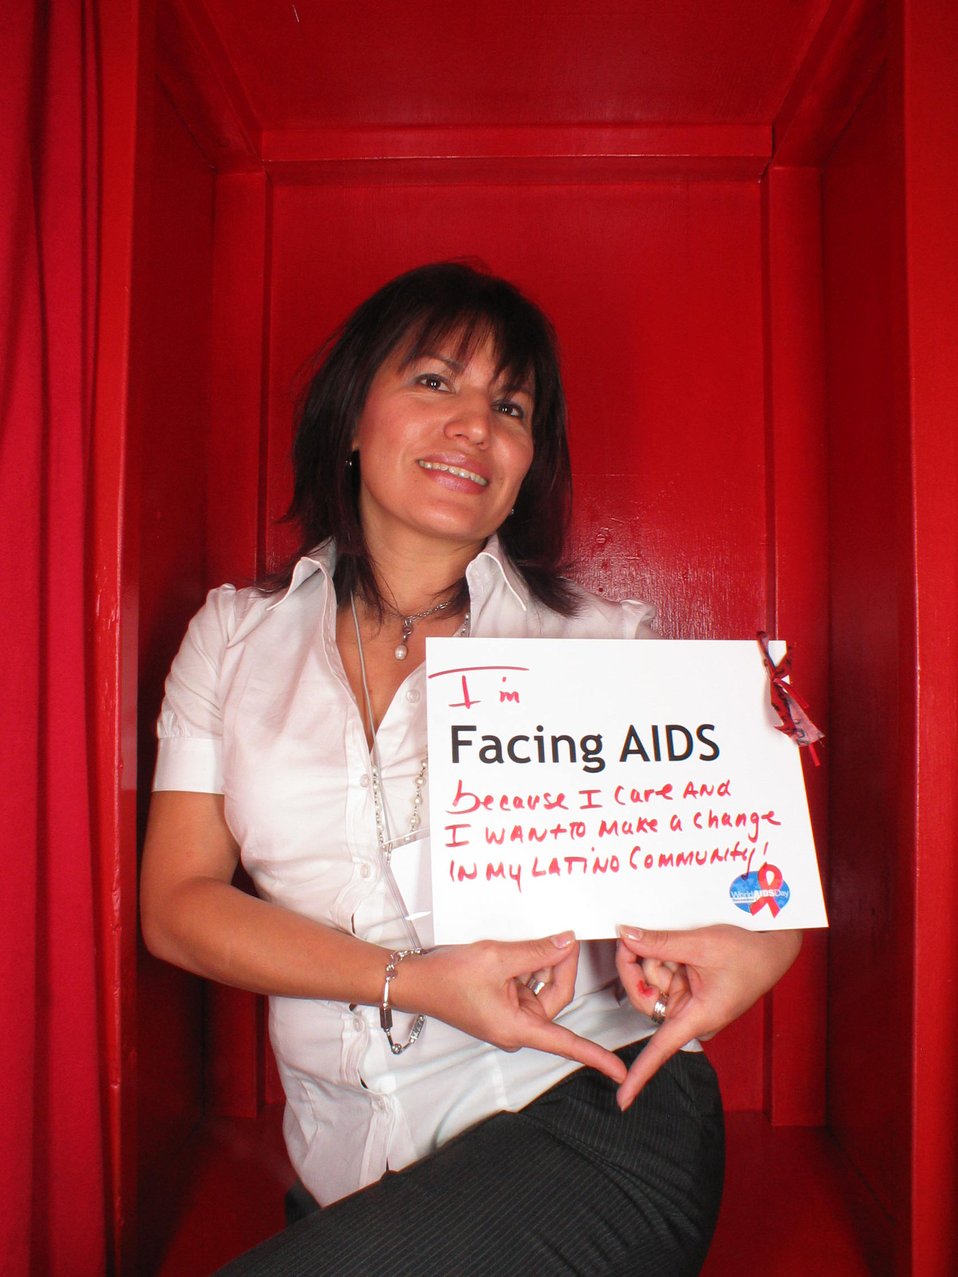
I'm Facing AIDS because I care and want to make a change in my Latino community!!!